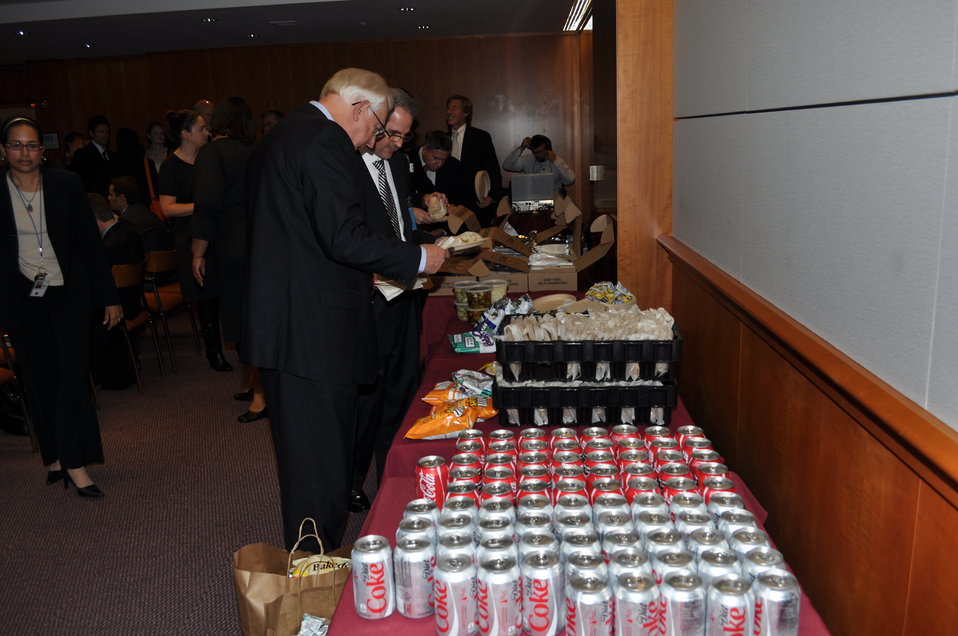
Spectrum Summit